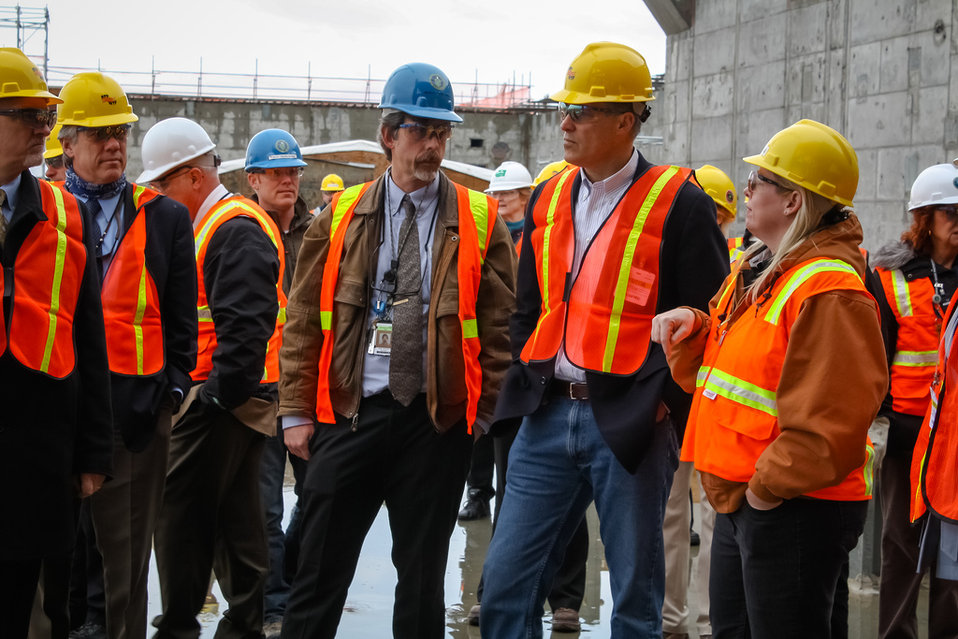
Inslee Visit at Hanford

Washington State Governor Jay Inslee, accompanied by Senior Advisor for Environmental Management Dave Huizenga, visits Hanford Tank Farms and Waste Treatment Plant